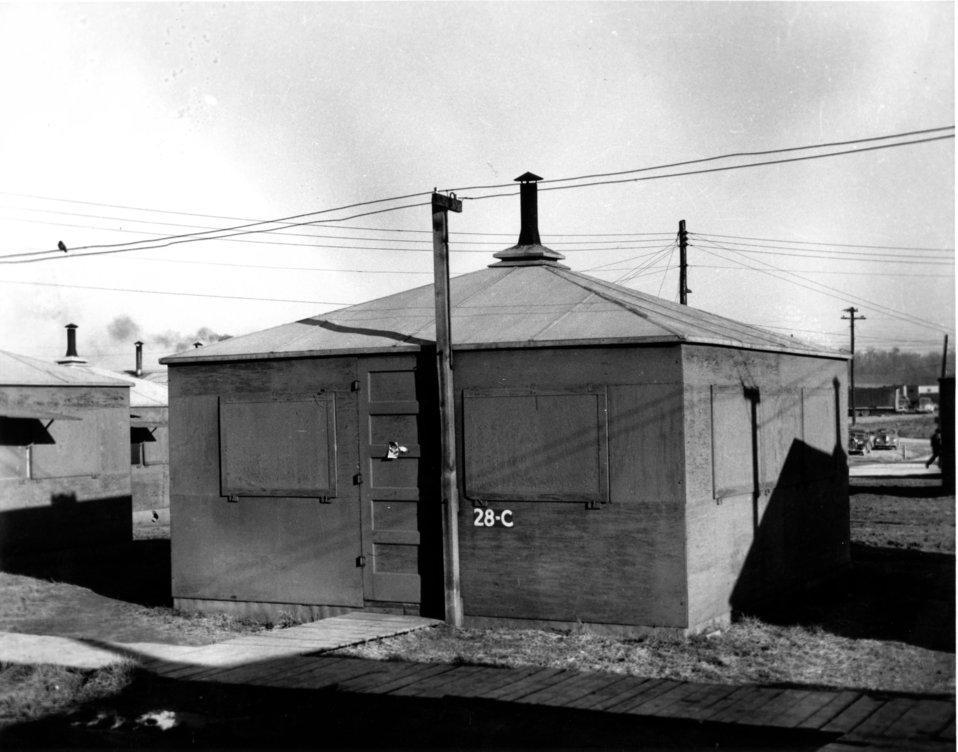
Housing at Oak Ridge